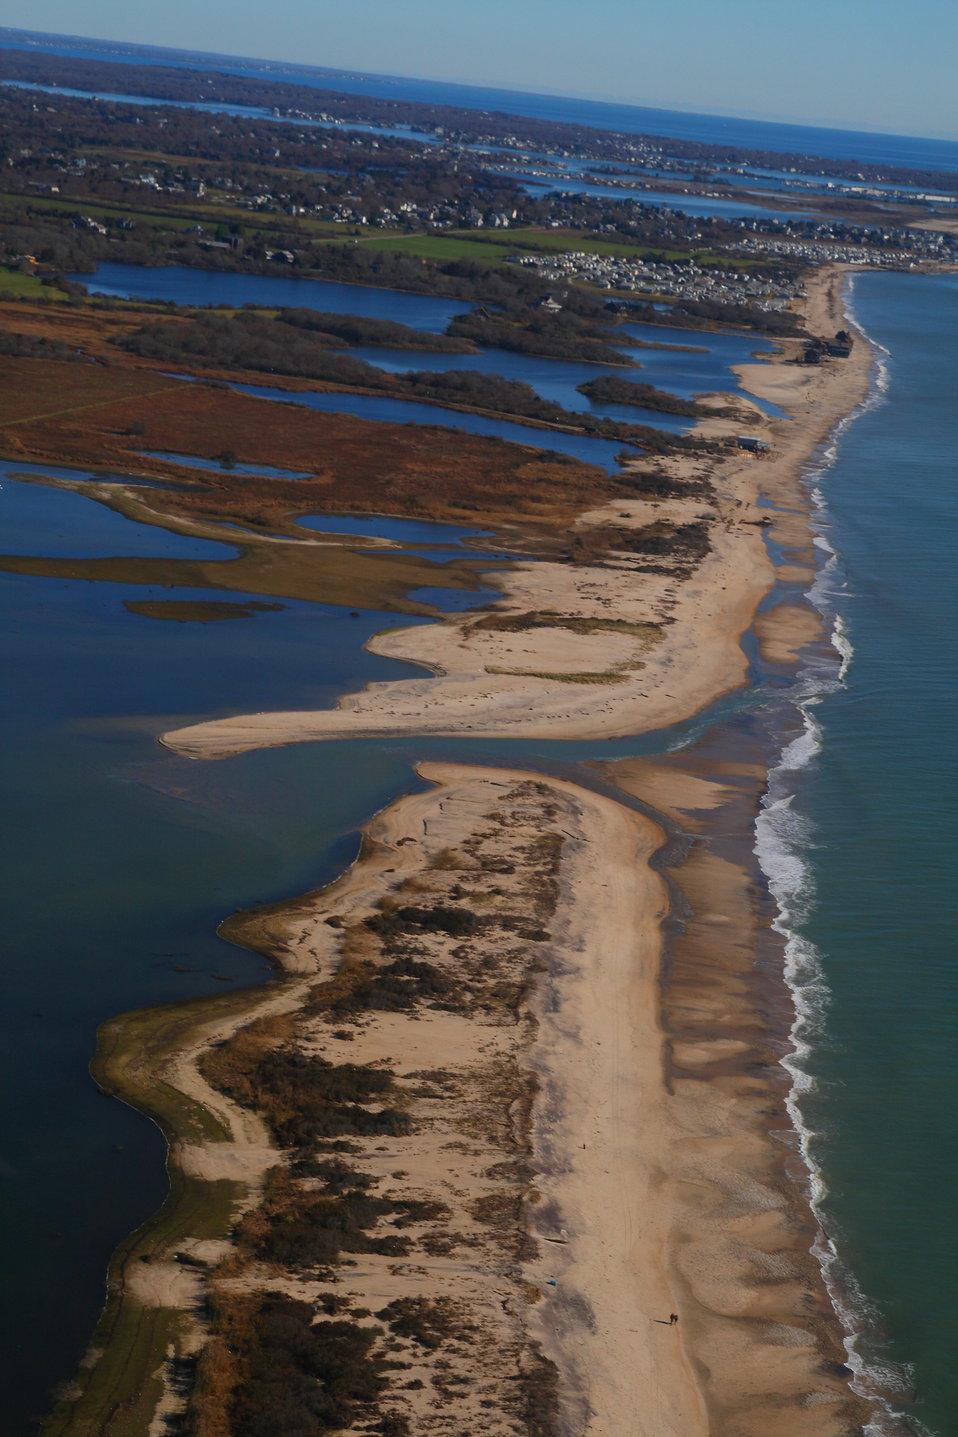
Trustom Pond breach after Hurricane Sandy (RI)

This shows the breach between the Atlantic Ocean and Trustom Pond along the thin stretch of Moonshine Beach on coastal Rhode Island.